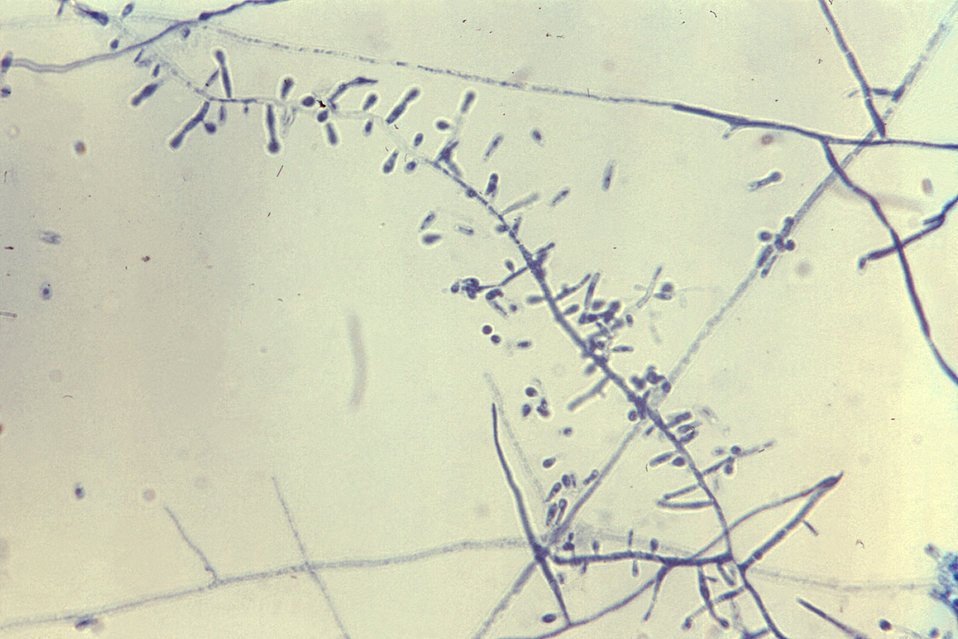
Magnified 475X, this photomicrograph depicts some of the structural morphology of the fungus, Trichophyton tonsurans. A dermatophyte, these T. tonsurans organisms display mycelia, or branching hyphae, i.e., the vegetative portion of the fungus, and numerous microconidia.